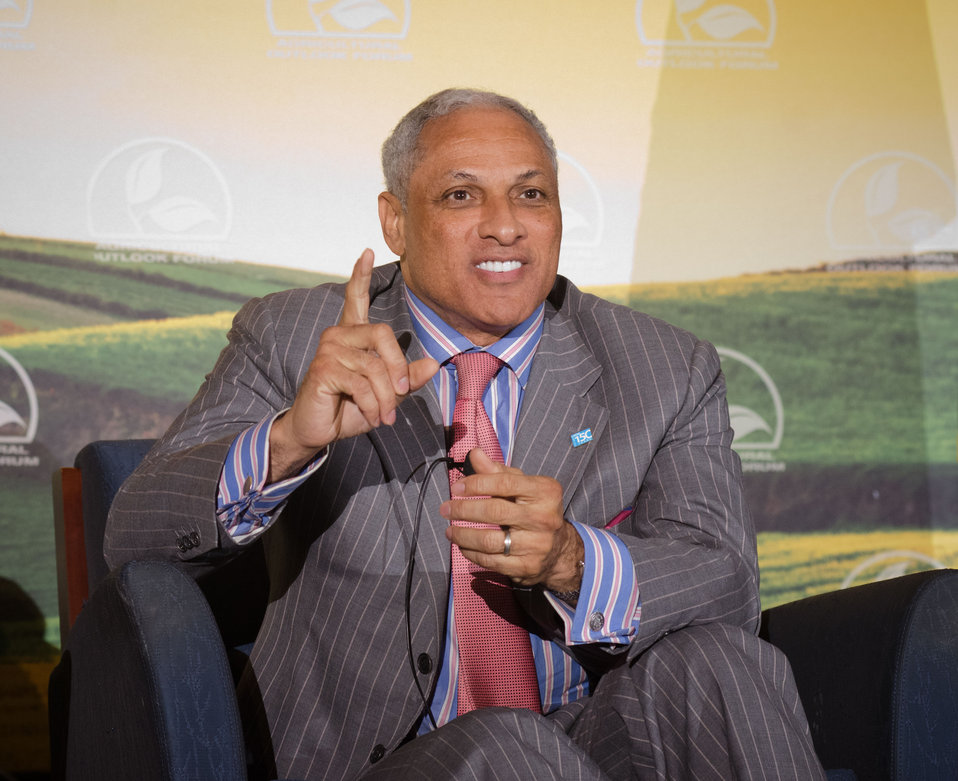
At the 2012 Agricultural Outlook Forum, “Moving Agriculture Forward” in Arlington, VA, held on Thursday, February 23, 2012, 7 former Secretaries of Agriculture sat on the plenary panel “Visions of the Future” hosted by current Agriculture Secretary Tom Vilsack. Former Congressman Mike Espy (MS) speaks out during the panel discussions.